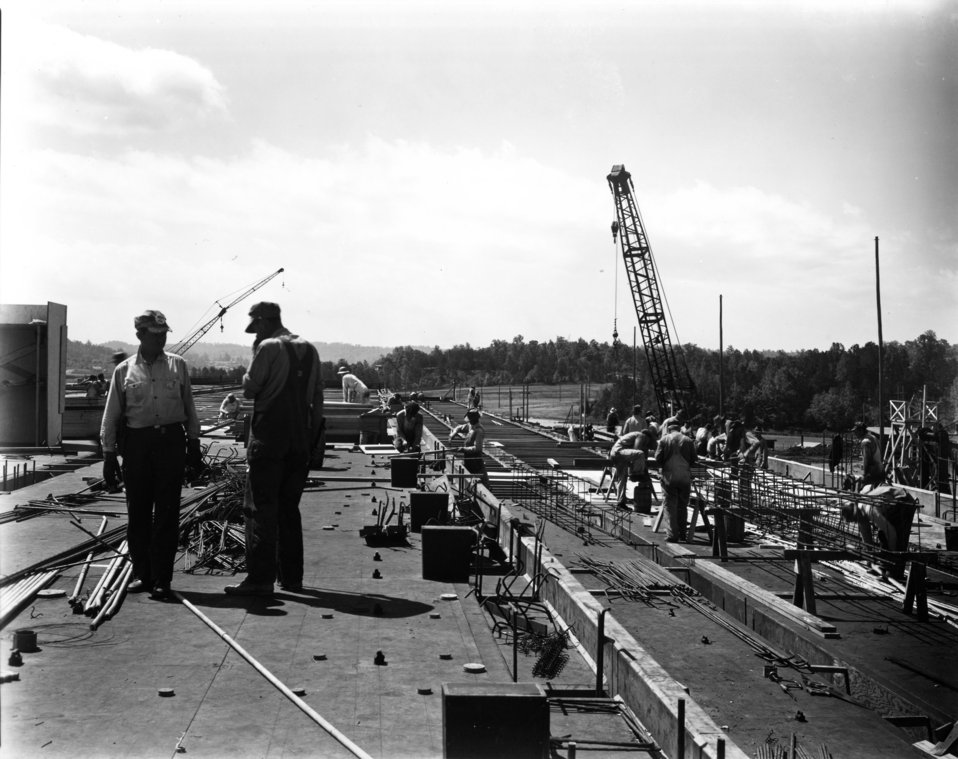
K-27 at Oak Ridge